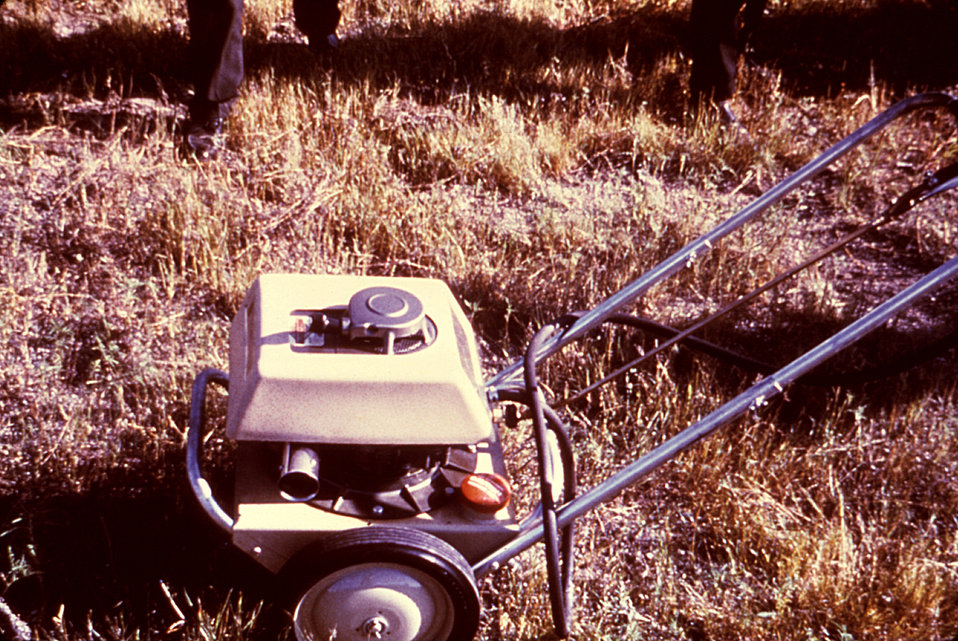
This 1981 photograph depicts the use of a thermal fog generator in order to control a population of potential mosquito disease vectors by disseminating an insecticide fog.